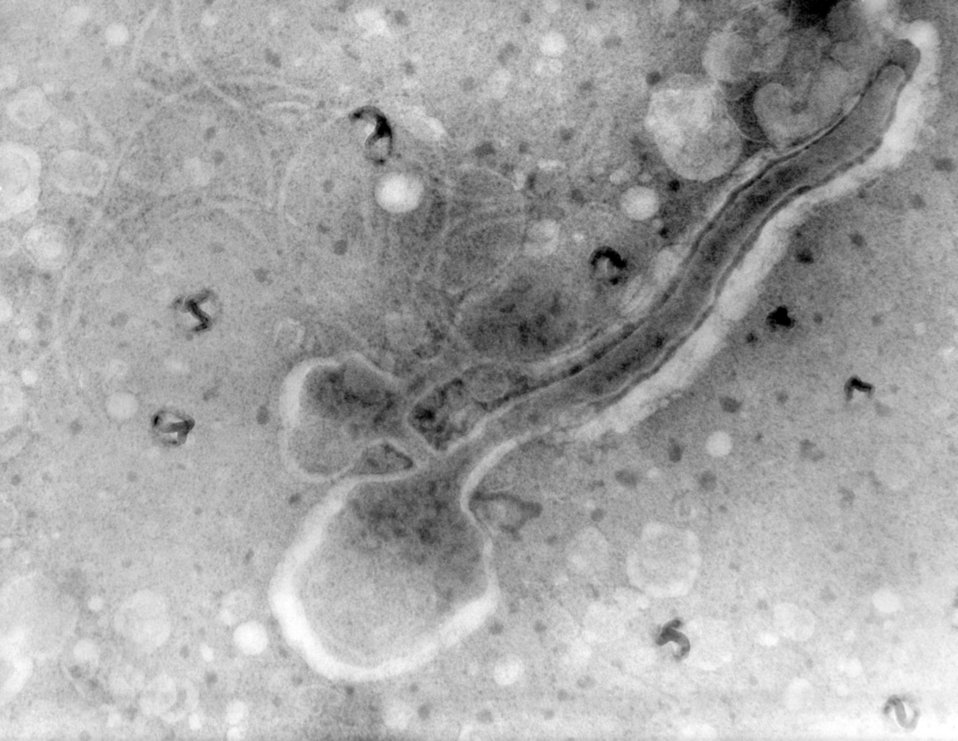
A photomicrograph of a Treponema pallidum bacterium.